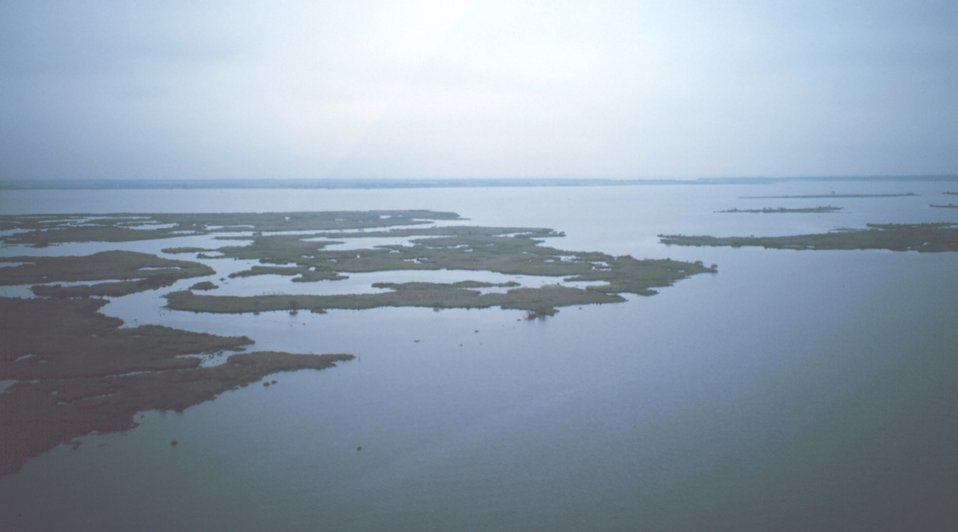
Eroding marsh peninsula between Bayous Perot and Rigolettes